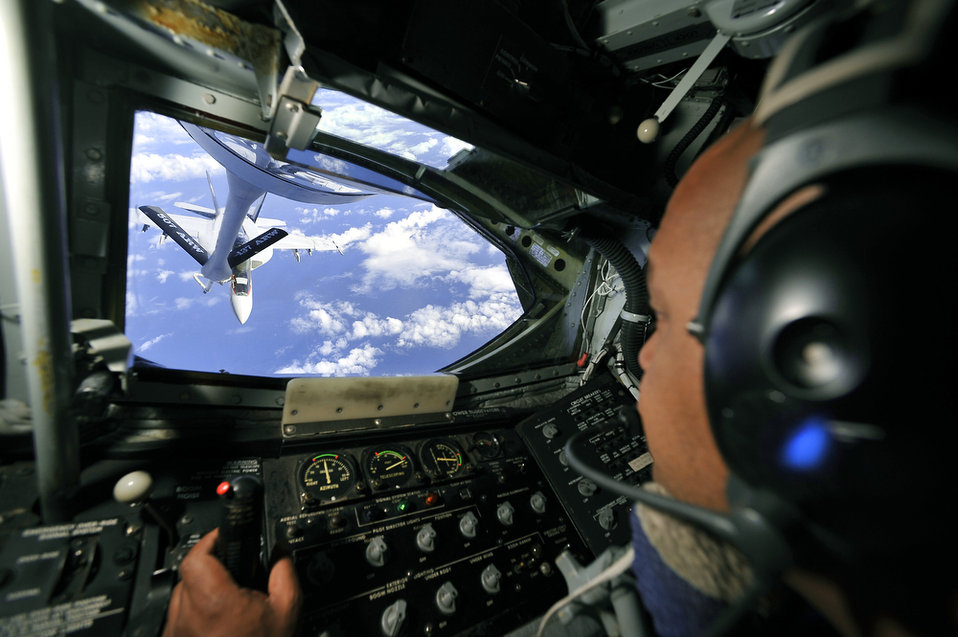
Refuelers keep aircraft flying during exercise

Staff Sgt. Ron Davis, a KC-135 Stratotanker boom operator with the 507th Air Refueling Wing at Tinker Air Force Base, Okla., keeps the boom steady while refueling a U. S. Navy F/A-18F Super Hornet over the waters of Hawaii July 20, 2010, during the Rim of the Pacific Exercise. RIMPAC, the world's largest maritime exercise, is a biennial event which stresses interoperability among the 14 nations participating in the exercise. The tanker is staging out of Joint Base Pearl Harbor-Hickam, Hawaii.